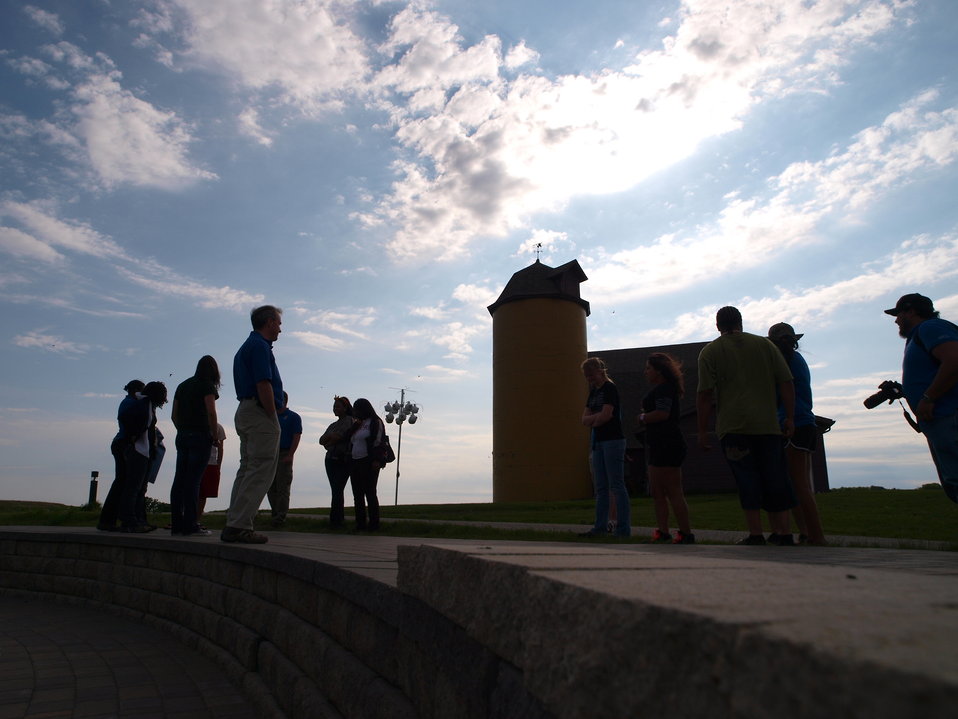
CDIP 2012 Fergus Falls

Arriving at the Prairie Wetlands Learning Center